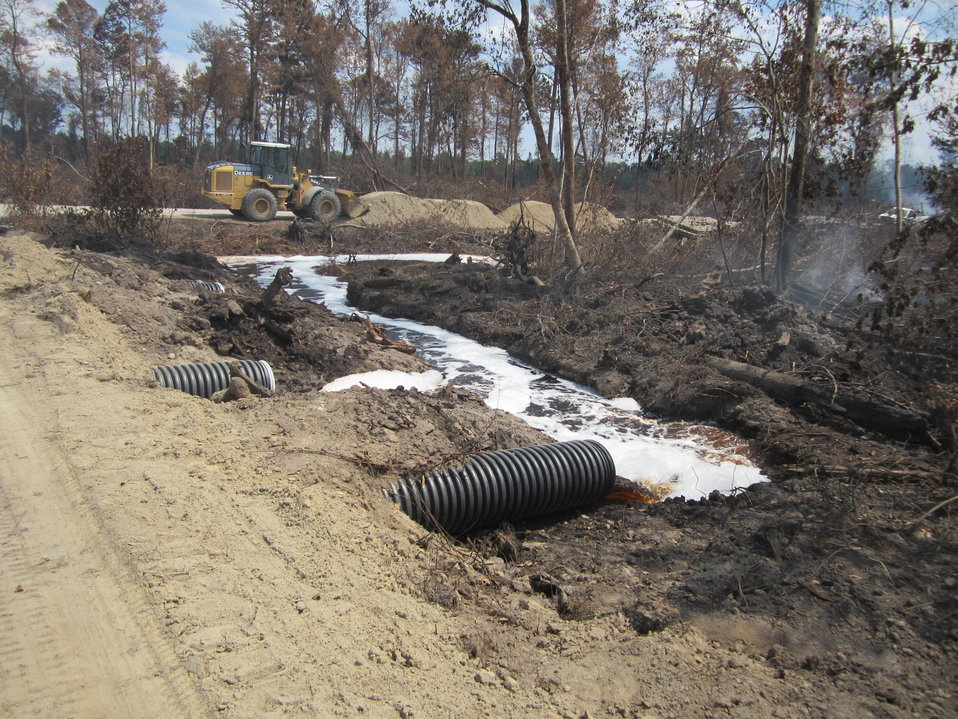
Keep it coming

Suffolk, VA, August 2011: Watter flows out of pipes buried underneath Corapeake Ditch to flood burning peat at the Lateral West Fire in Great Dismal Swamp .